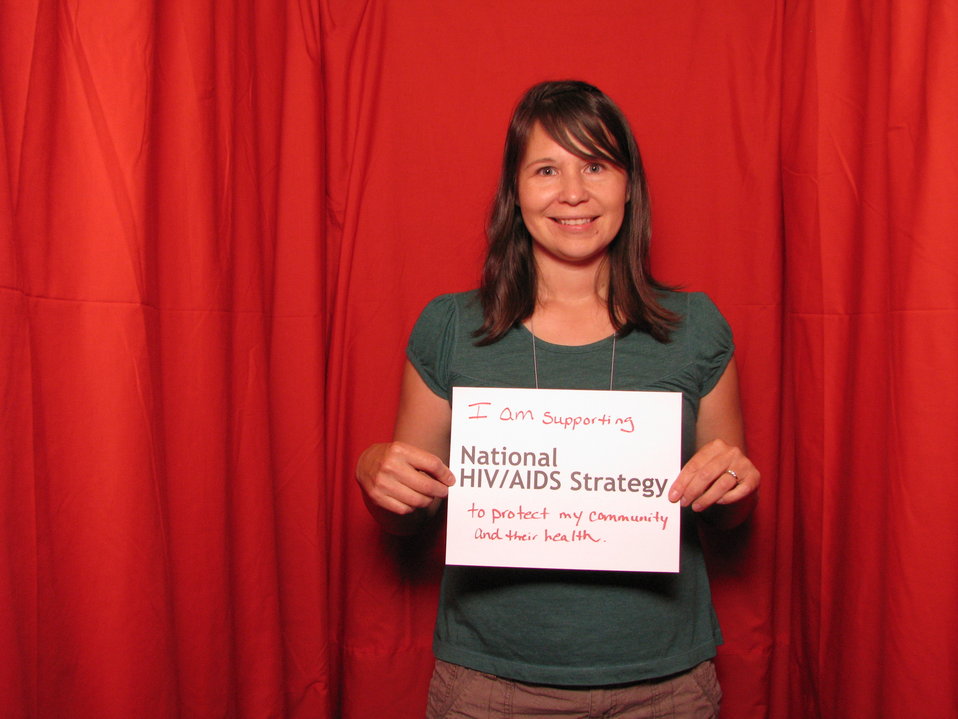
I am supporting the National HIV/AIDS Strategy to protect my community and their health

From the AIDS.gov photo booth at the U.S. Conference on AIDS, September 2010 (Orlando, FL).